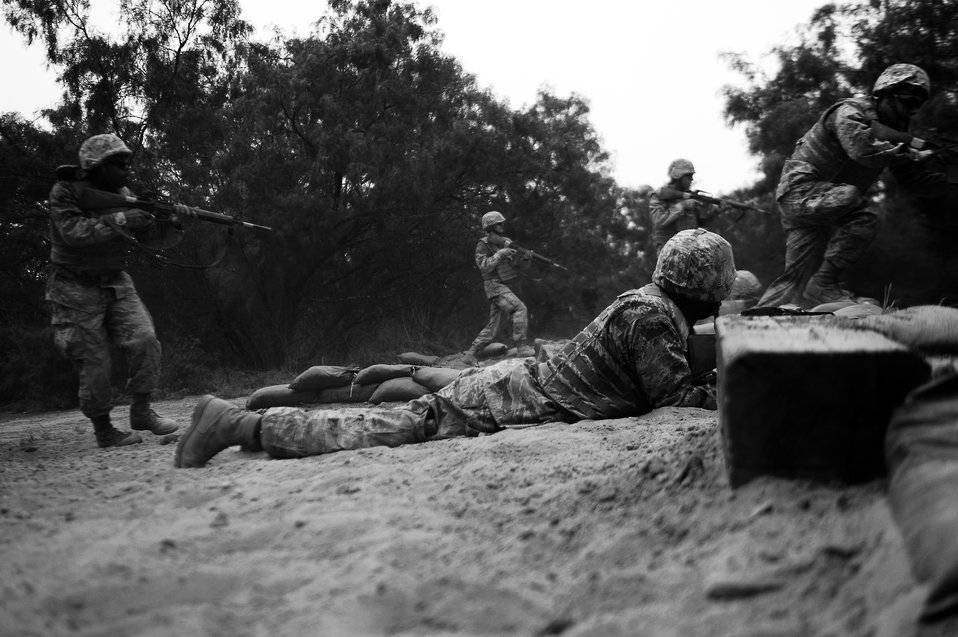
BEAST

Basic trainees go through their sixth week of Air Force basic military training at the Basic Expeditionary Airman Skills Training on May 25, 2011, at Lackland Air Force Base, Texas.